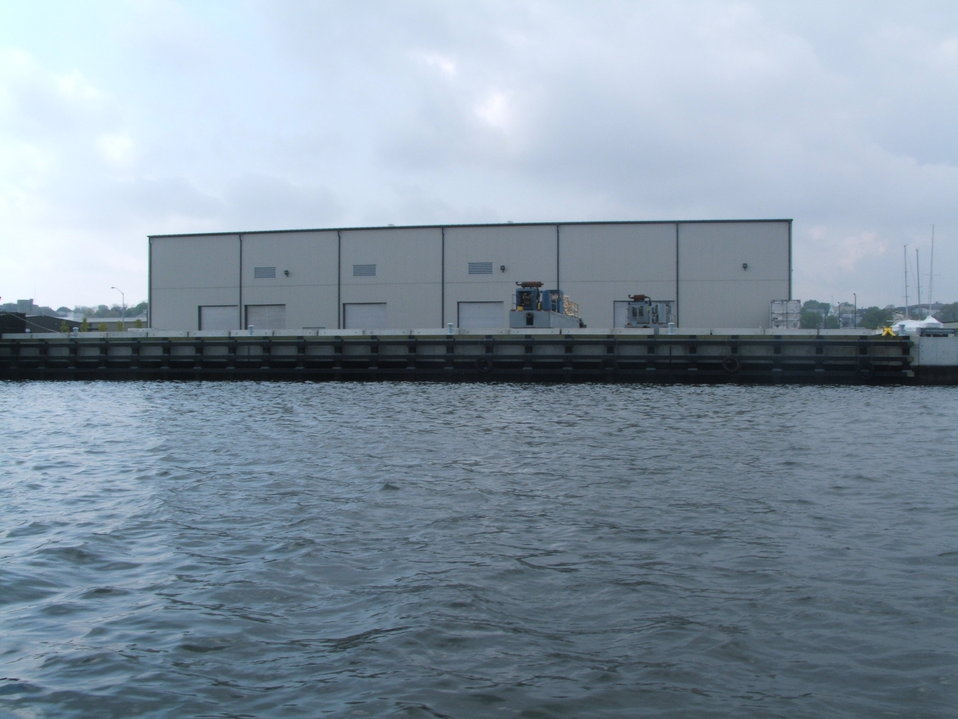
June 2003, the de-watering facility ready for the start of full scale dredging in 2004

This processing facility works by removing excess water from the contaminated sediment. By shedding water weight, it greatly reduces the amount of contaminated material that needs to be disposed of.

The water is filtered and treated to stringent water quality standards before being released back into the harbor.